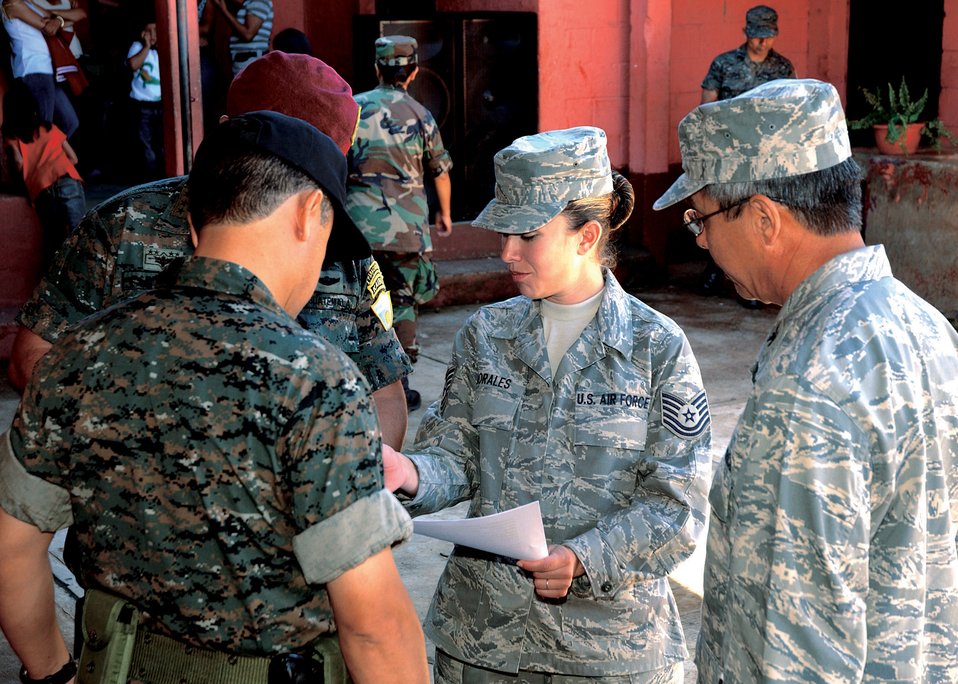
Exercise gives Guardsman a new perspective

Tech. Sgt. Shirley Morales, serving as a translator, reviews a script with U.S. and Guatemalan military members prior to an opening ceremony welcoming the 163rd Medical Group to Santa Rosa, Guatemala, to provide medical care to the local citizens. Sergeant Morales, who was born and raised in Santa Rosa, accompanied medical group during the recent medical readiness training exercise to assist with translating for the team. Sergeant Morales is a force development technician with the 163rd Reconnaissance Wing.